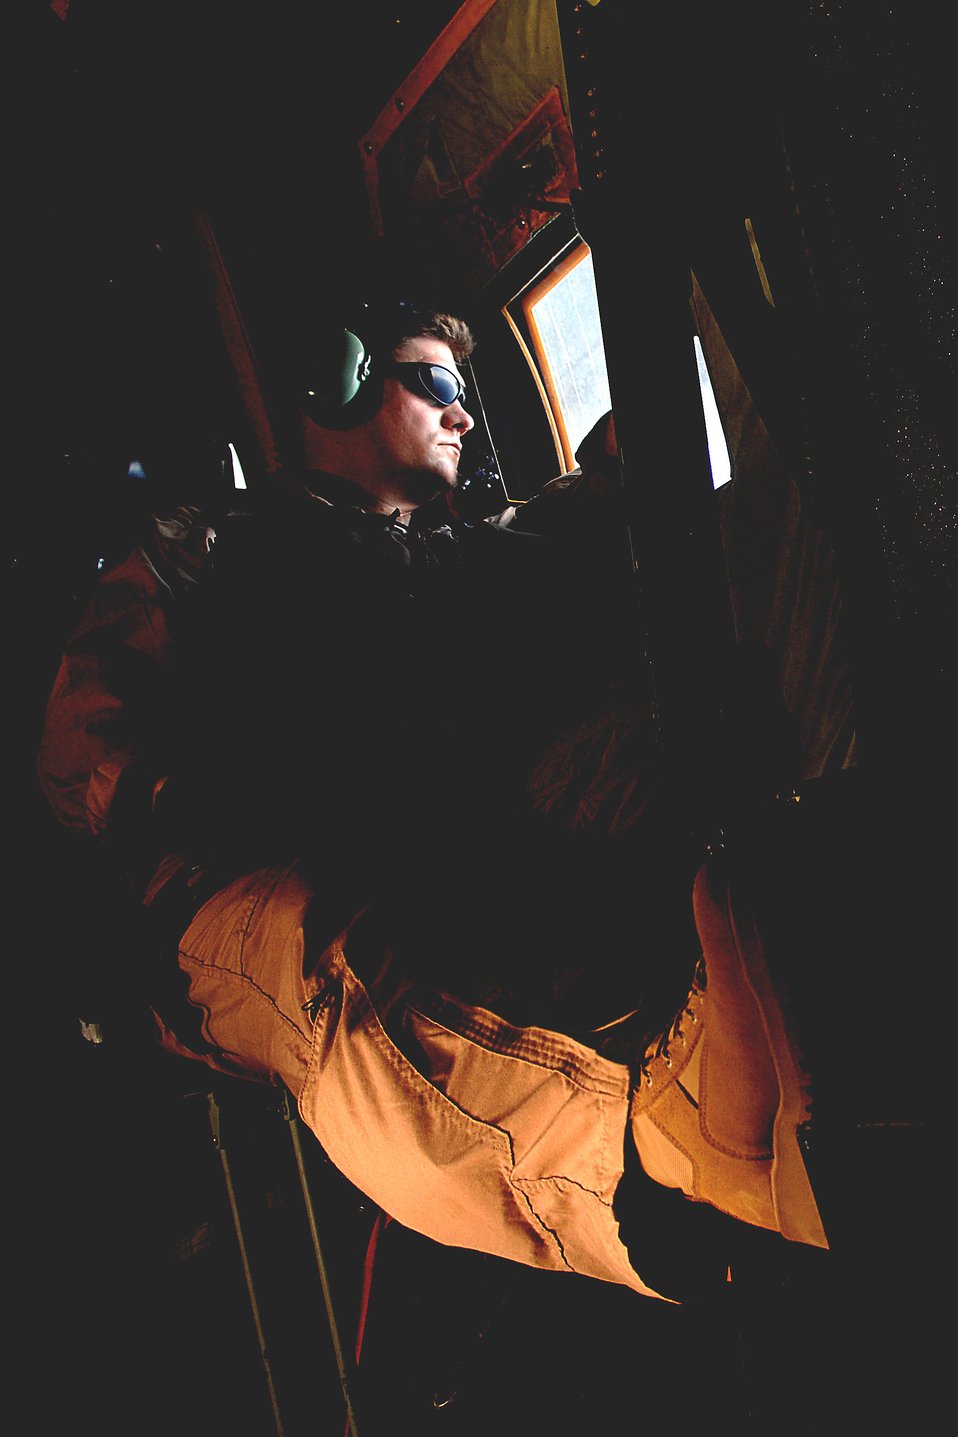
Djibouti Mission

Tech. Sgt. James Floyd scans the sky from the jump door window of an HC-130 Hercules during a mission June 3 off the coast of Djibouti. Sergeant Floyd is deployed to Combined Joint Task Force-Horn of Africa out of Camp Lemonier, Djibouti. The aircraft loadmaster is with the 71st Search and Rescue Squadron at Moody Air Force Base, Ga.